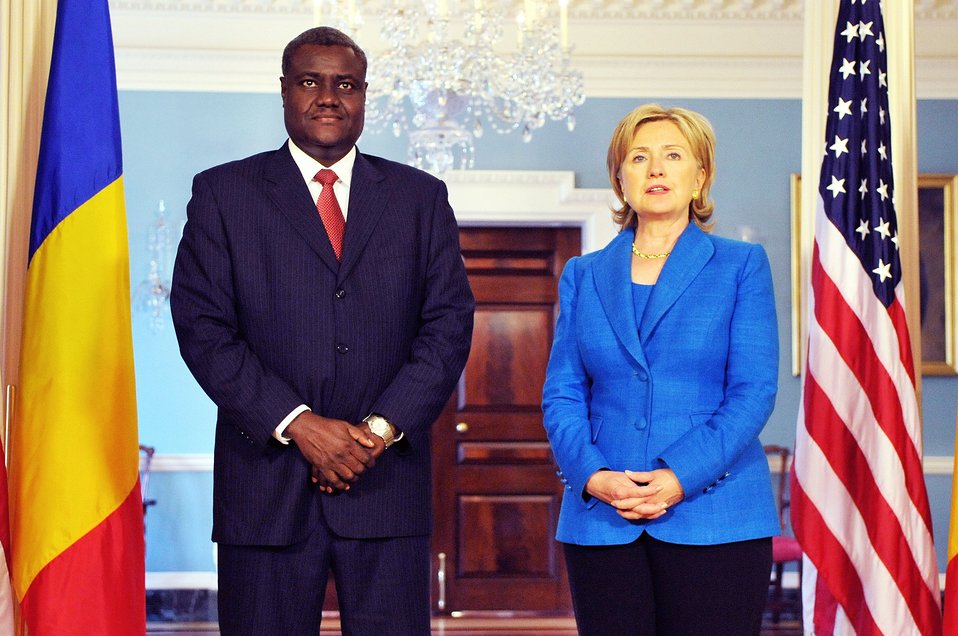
Secretary Clinton Meets With Minister of Foreign Affairs and African Integration of the Republic of Chad

U.S. Secretary of State Hillary Rodham Clinton holds a bilateral meeting with His Excellency Moussa Faki Mahamat, Minister of Foreign Affairs and African Integration of the Republic of Chad at the U.S. Department of State in Washington, DC July 15, 2009.